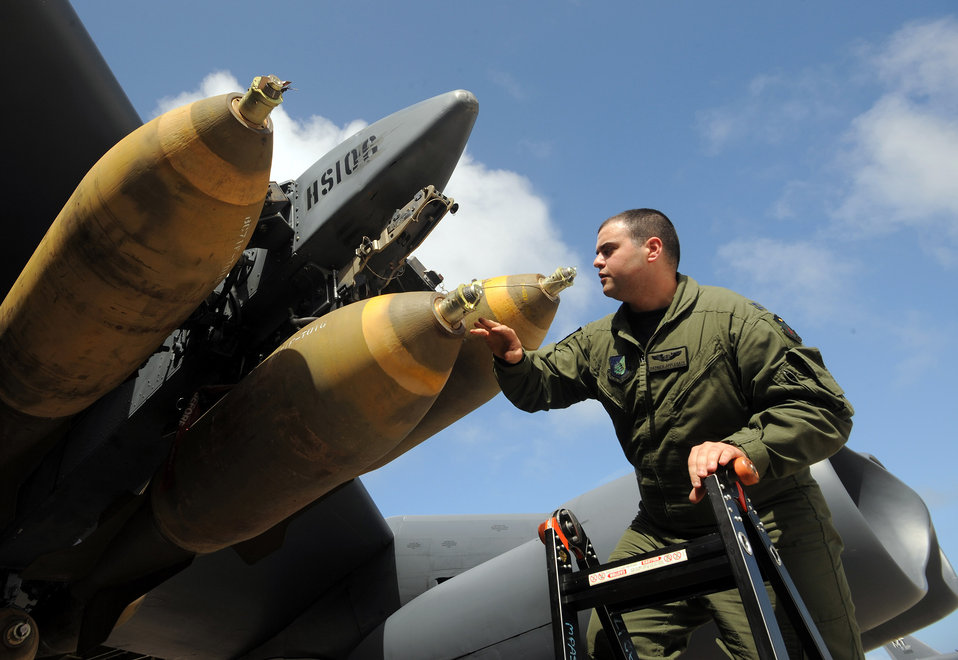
Ready for action

At Andersen Air Force Base, Guam, Capt. Patrick Applegate inspects the M-117 ordnance on his B-52 Stratofortress before a live-drop mission Jan. 29 for exercise Tropic Fury. The B-52 is deployed from Minot, N.D.